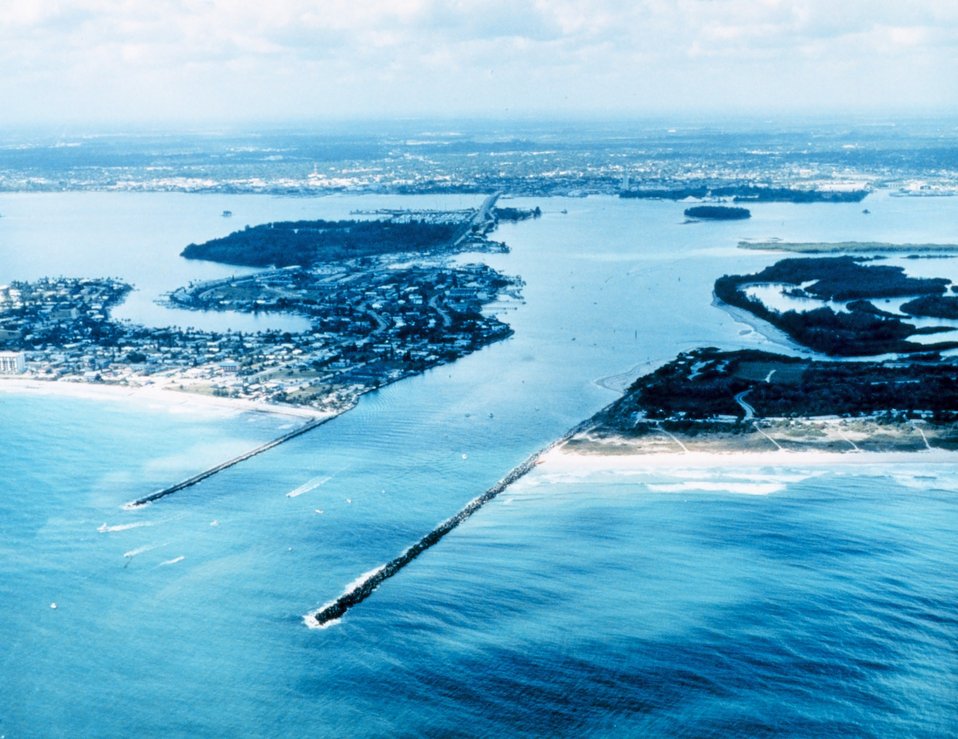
2729 North Latitude 8018 West Longitude.